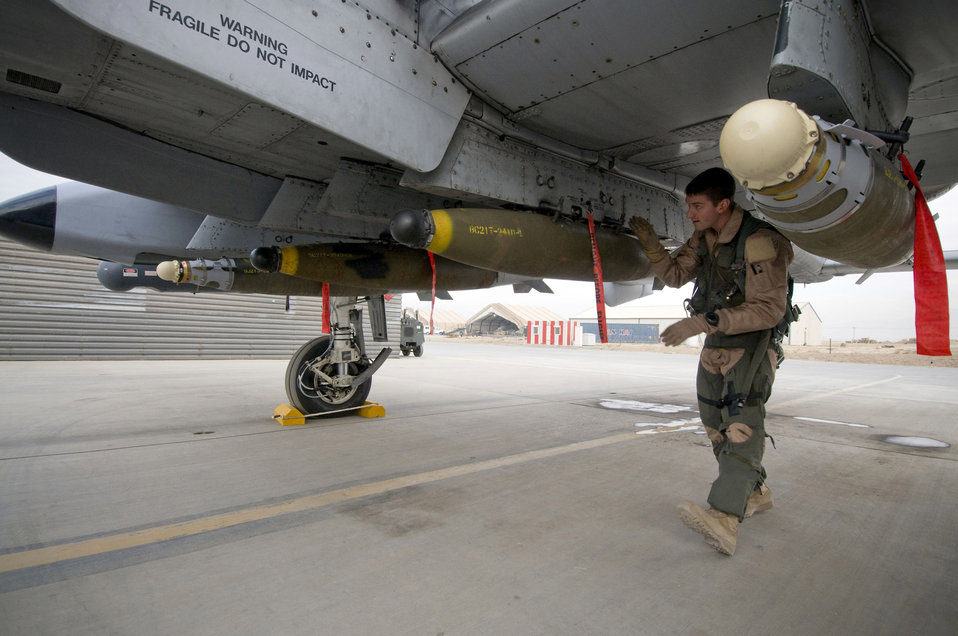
Thunderbolts active during the holidays

Capt. Eric Fleming performs a preflight walk-around of an A-10 Thunderbolt II Dec. 2 at Bagram Airfield, Afghanistan. Captain Fleming is the assistant wing weapons and tactics officer and an A-10 pilot. He is deployed from Moody Air Force Base, Ga., and hails from Philadelphia.